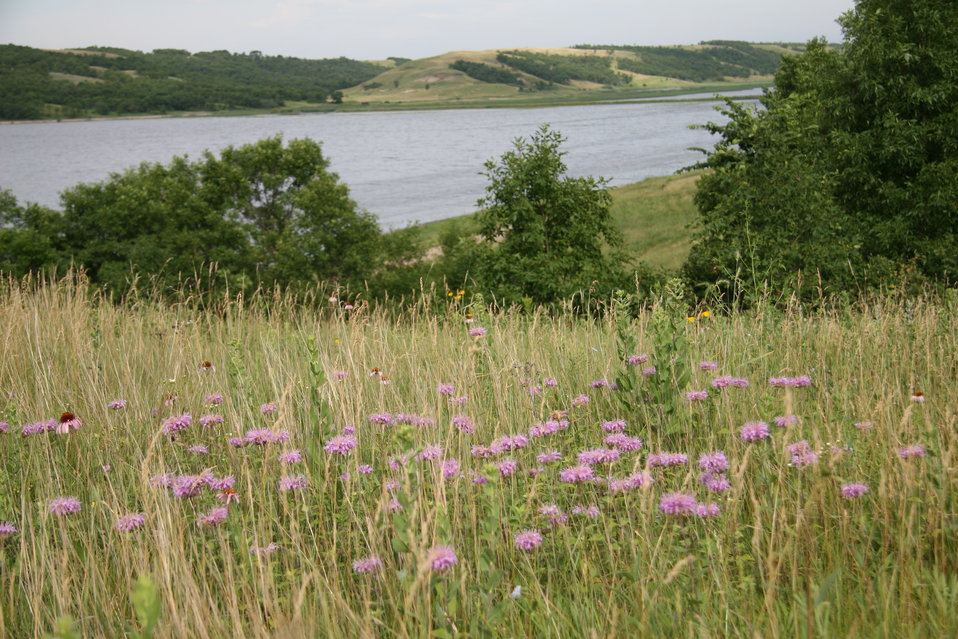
Field of wild bergamots overlooking Des Lacs Lake seen on a Wildflower Walk Program at Des Lacs National Wildlife Refuge. Great view!